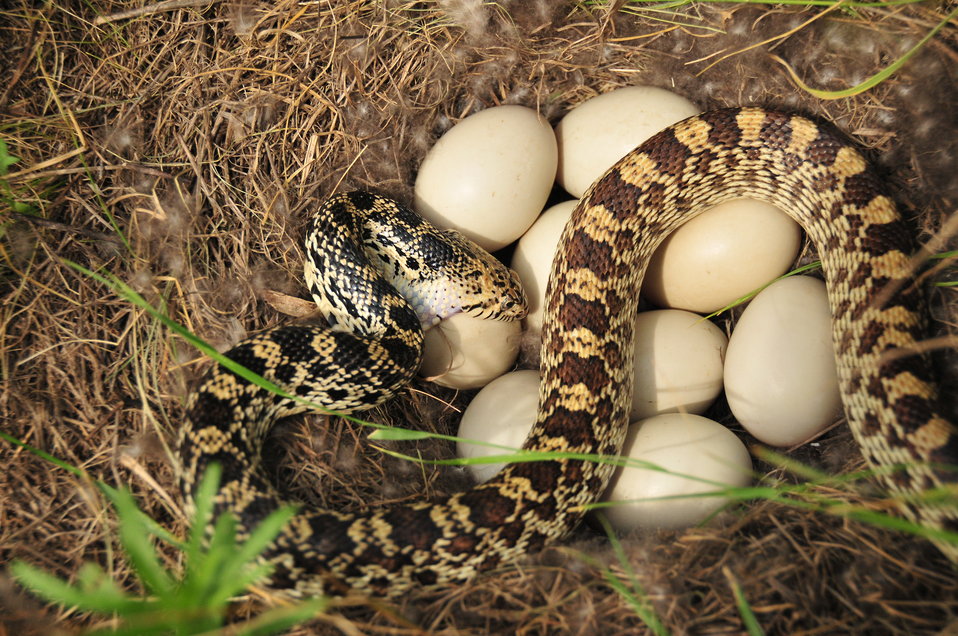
Bullsnake Eating Mallard Egg

Bullsnakes can be serious predators of ground nesting birds and their eggs. This scene was discovered when the hen mallard flushed from her nest, revealing that the bullsnake was taking an egg from underneath the incubating hen.